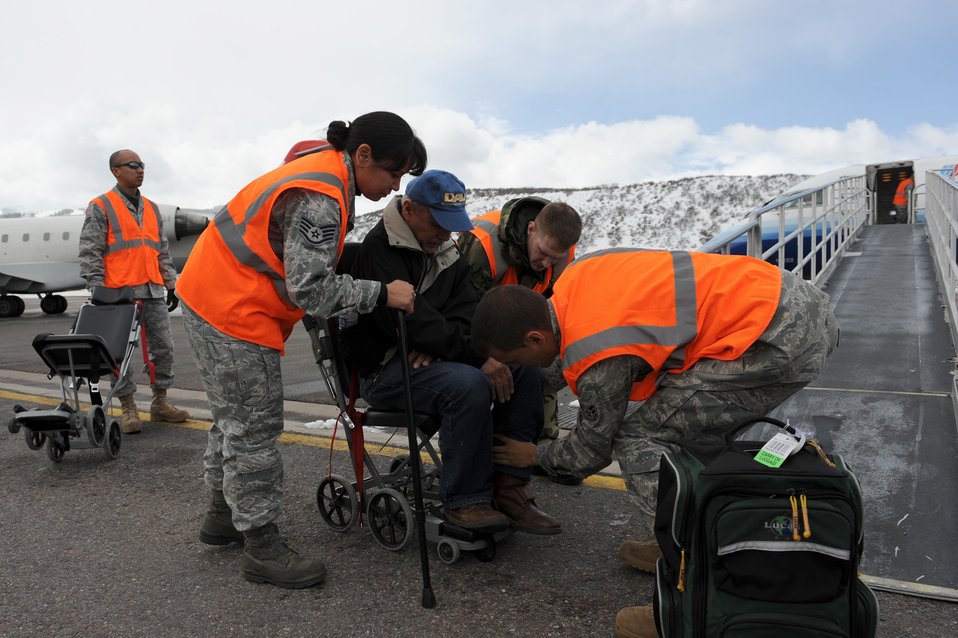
Winter Sports Clinic

Staff Sgt. Audrey Delong, Tech. Sgt. Dennis Leskovec and Airman First Class Taylor Quintero help a veteran into a wheelchair March 27, 2010, at the airport in Aspen, Colo. Veterans were arriving from all over the world for the 24th National Disabled American Veterans Winter Sports Clinic. The three volunteers from Luke Air Force Base, Ariz., were there to assist veterans arriving for the games.